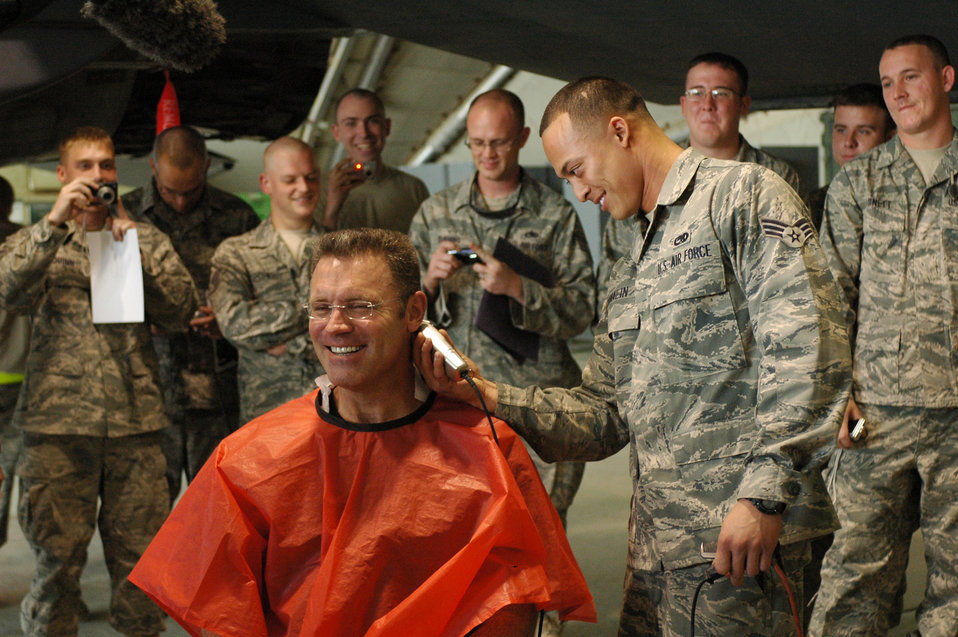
'Fox NFL Sunday' team visits Bagram

Senior Airman Nikita Canalin gives Howie Long,